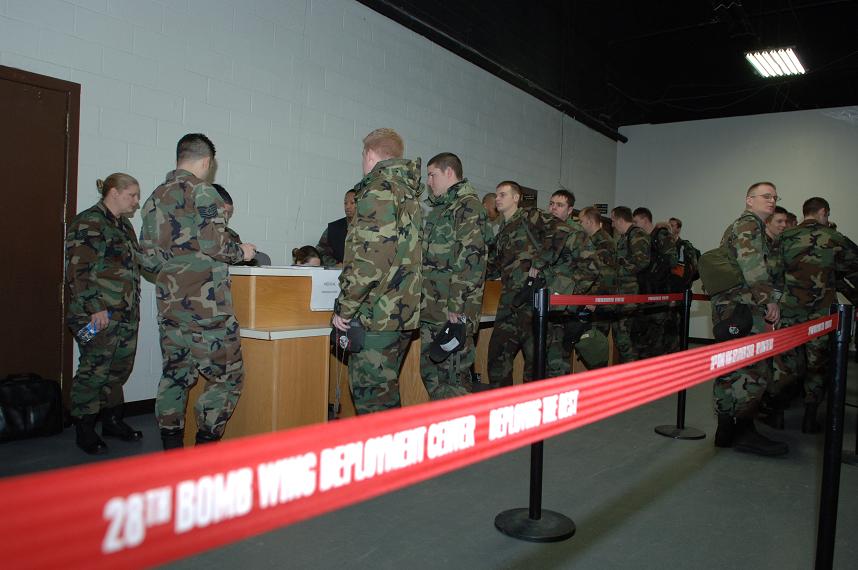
deployment to Southwest Asia from Ellsworth

Members of the 28th Bomb Wing, participate in a personnel deployment function (PDF) line prior to their upcoming deployment to Southwest Asia from Ellsworth Air Force Base, South Dakota, January 24, 2007. The 28th Bomb Wing is deploying troops to Southwest Asia in support of operations Iraqi Freedom and Enduring Freedom.